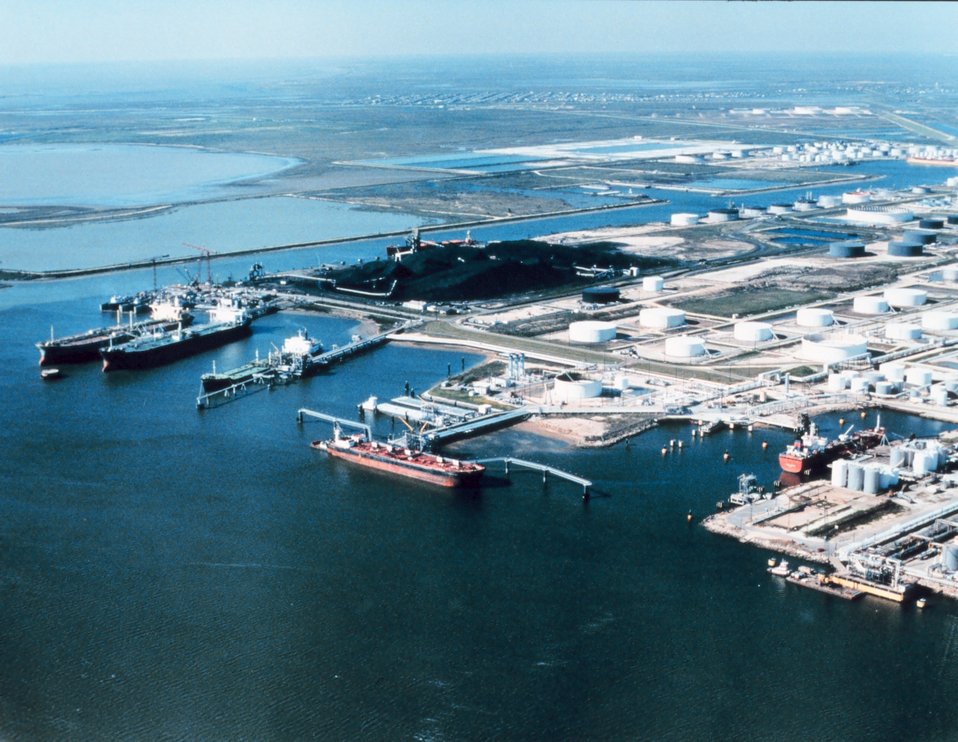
2923 North Latitude 9454 West Longitude.